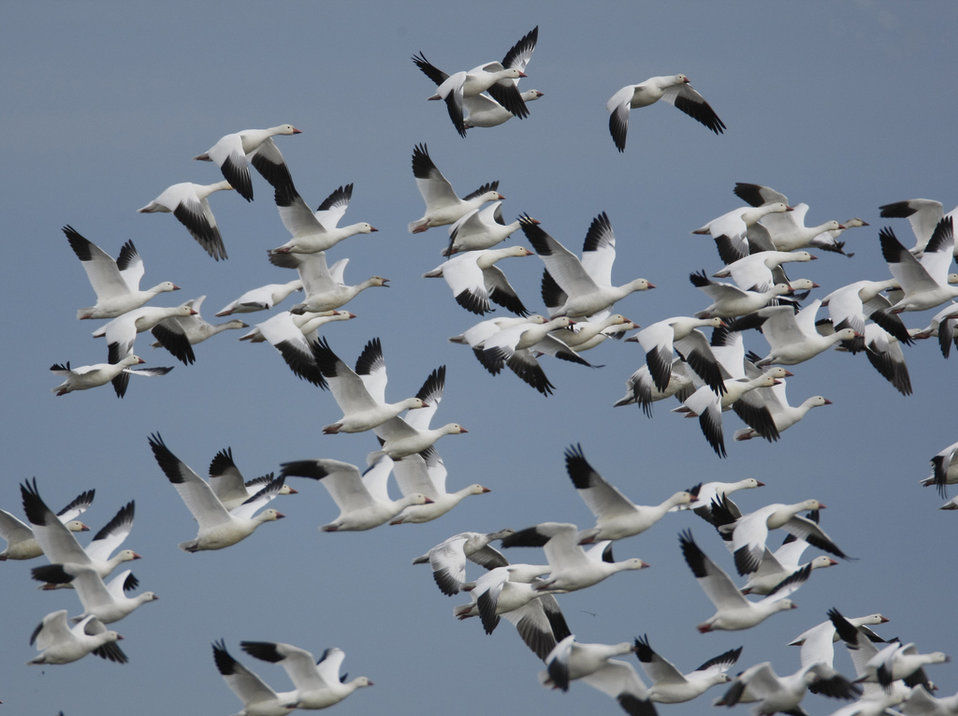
auto tour sights

snow geese and Ross' geese
Sacramento National Wildlife Refuge, CA